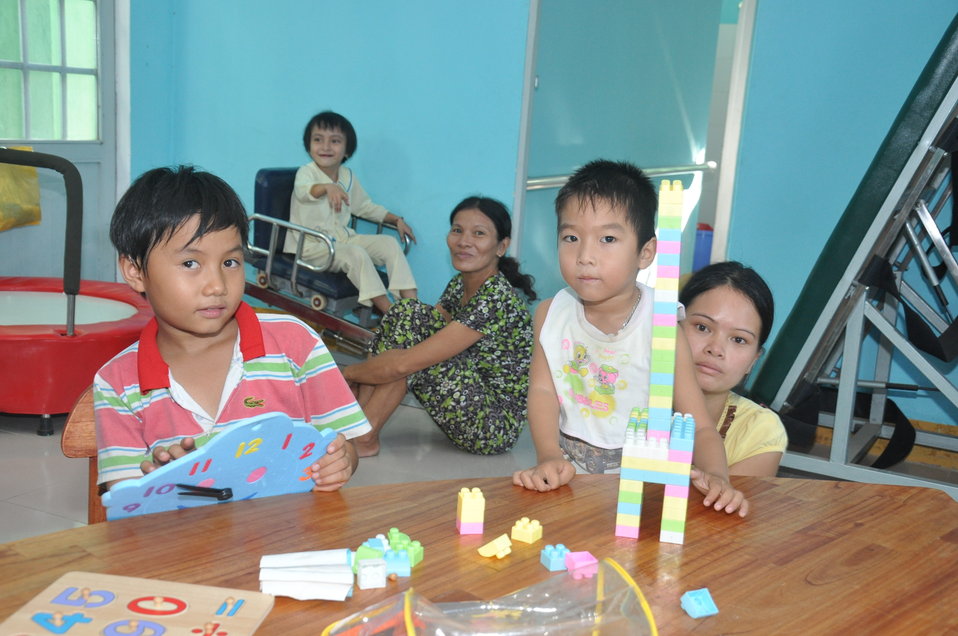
USAID Supports Persons with Disabilities in Danang

Danang, June 10, 2013.